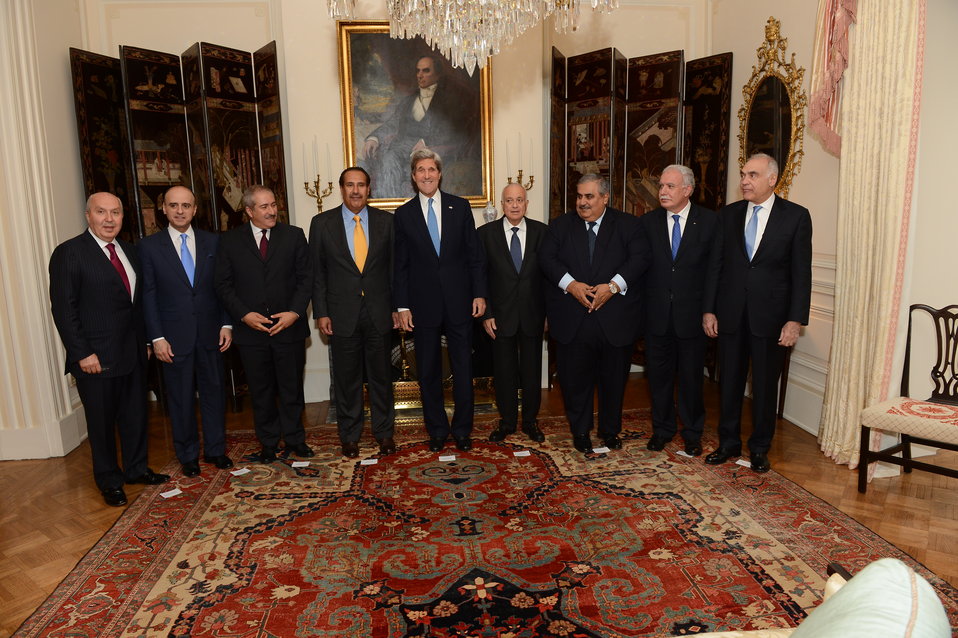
Secretary Kerry Poses for a Photo with the Arab League Delegation

U.S. Secretary of State John Kerry poses for a photo with the Arab League delegation, led by Qatari Prime Minister and Foreign Minister Sheikh Hamad bin Jassim bin Jabr Al-Thani, at the Blair House in Washington, D.C., on April 29, 2013.